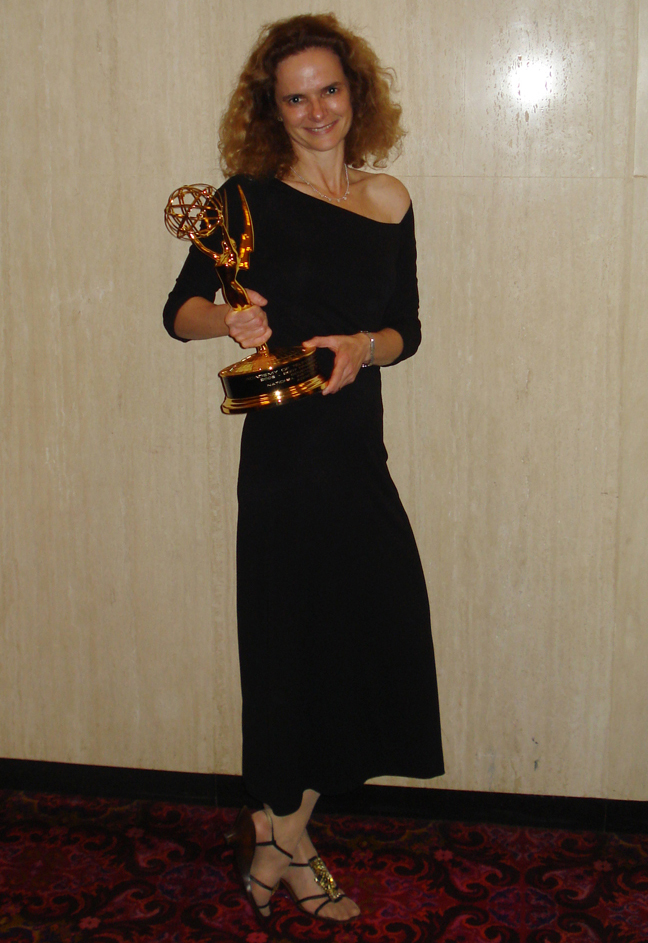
Dr. Nora Volkow at 2007 Emmy Awards

NIDA received an Emmy (Governor’s Award) from the Academy of Television Arts and Sciences for its contribution to HBO’s program “Addiction,” a 14-part documentary television series and multimedia initiative revealing the science of addiction, its treatment, recovery, and its costs to families and society. The Governor’s Award is given in recognition of programming that demonstrates commitment to important social causes.